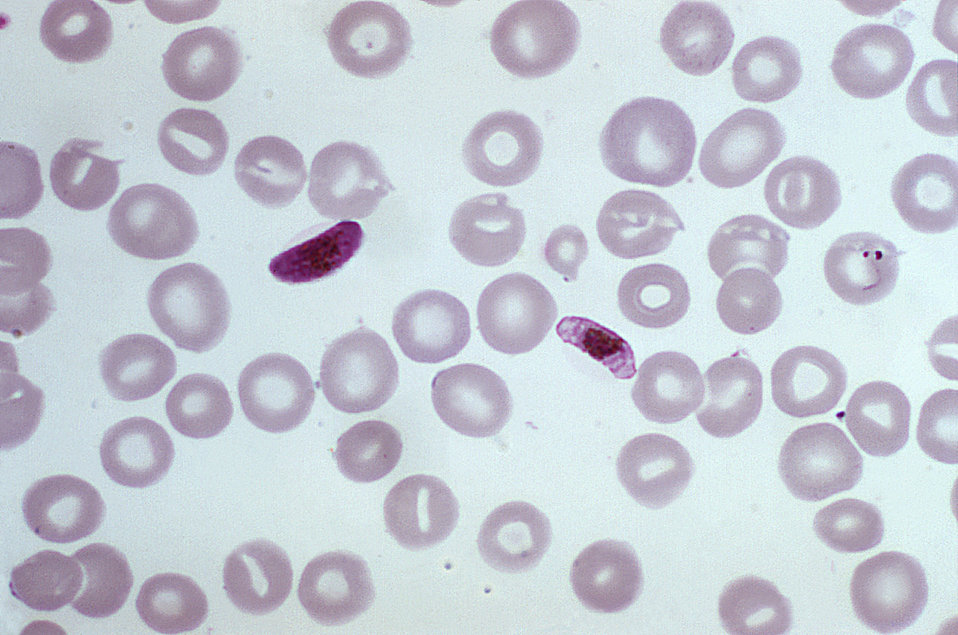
This photomicrograph of a blood smear contains a macro- and microgametocyte of the Plasmodium falciparum parasite.